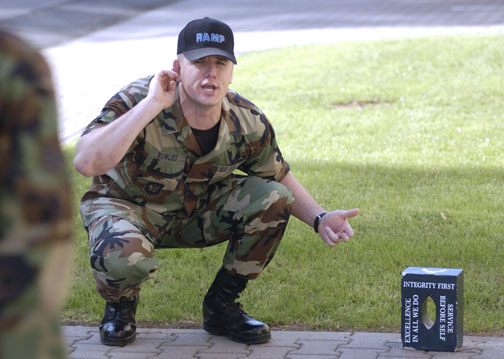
There's no quitting in the Air Force

RAMSTEIN AIR BASE, Germany -- Staff Sgt. Mike Bowles explains the blue brick with the Air Force's core values painted on it to candidates inprocessing at Ramstein's Area Motivational Program. This 30-day program is used by commanders to